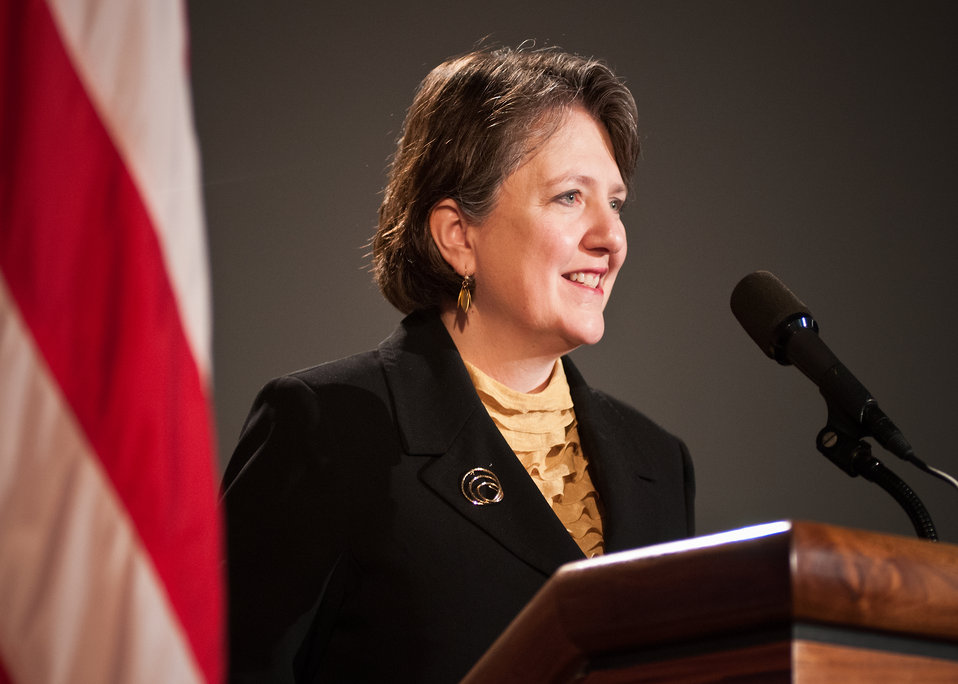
Dr. Kathleen Merrigan, Deputy Secretary welcomes employees and visitors to the National Service Day and Martin Luther King Celebration in honor of Dr. Martin Luther King Jr.’s contributions to the Civil Rights Movement at the United States Department of Agriculture in Washington, D.C., Thursday, January 12, 2012.